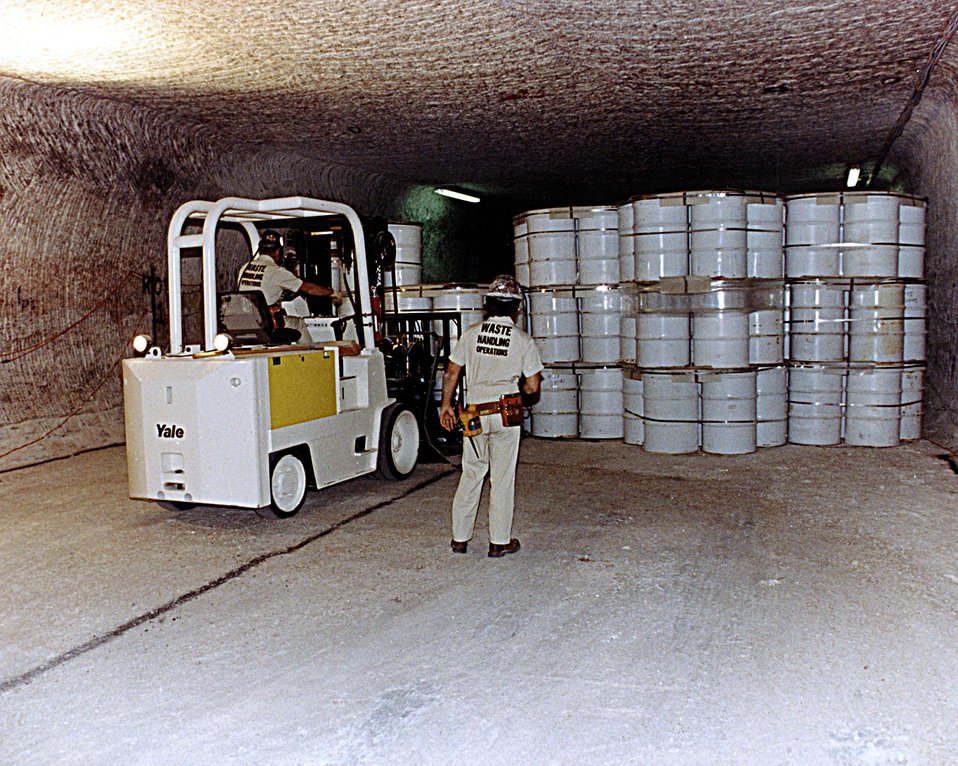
CONTACT HANDLING DEMONSTRATION (7 PACKS).

THE WASTE ISOLATION PILOT PLANT IS A DOE RESEARCH AND DEVELOPMENT FACILITY FOR DEMONSTRATING THE SAFE DISPOSAL OF TRANSURANIC RADIOACTIVE WASTES. TEST SHAFTS HAVE BEEN DRILLED TO A DEPTH OF 2,100 FEET. THE SHAFTS, ONE 6 FEET IN DIAMETER AND THE OTHER 12 FEET IN DIAMETER, PROVIDE AN ENTRY PASSAGE AND VENTILATION TO THE UNDERGROUND SALT ROCK FORMATION THAT IS BEING TESTED TO DETERMINE ITS SUITABILITY FOR RADIOACTIVE WASTE STORAGE.